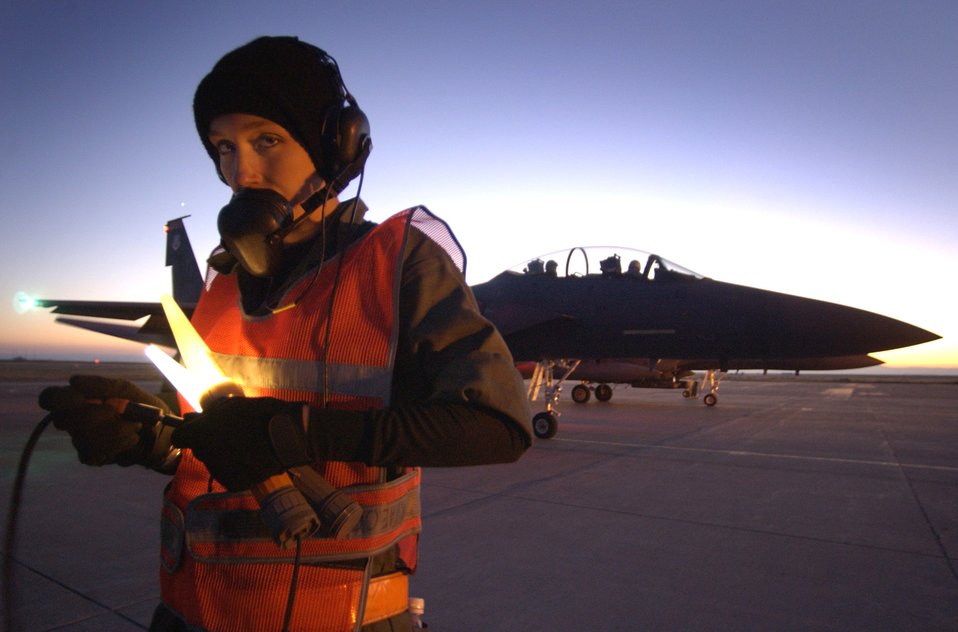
Ready to go

MOUNTAIN HOME AIR FORCE BASE, Idaho (AFPN) -- Senior Airman Tamara Rhone and fellow maintainers and weapons loaders do the final preflight inspection on an F-15E Strike Eagle before takeoff. Airman Rhone is a crew chief assigned to the 391st Aircraft Maintenance Unit.